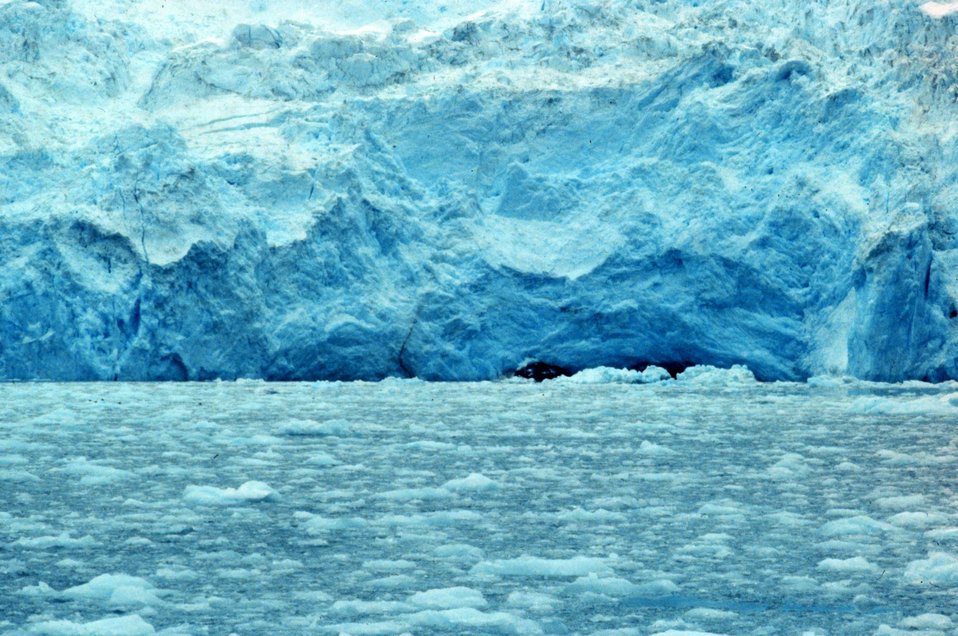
Front of glacier in Kenai Fjords.